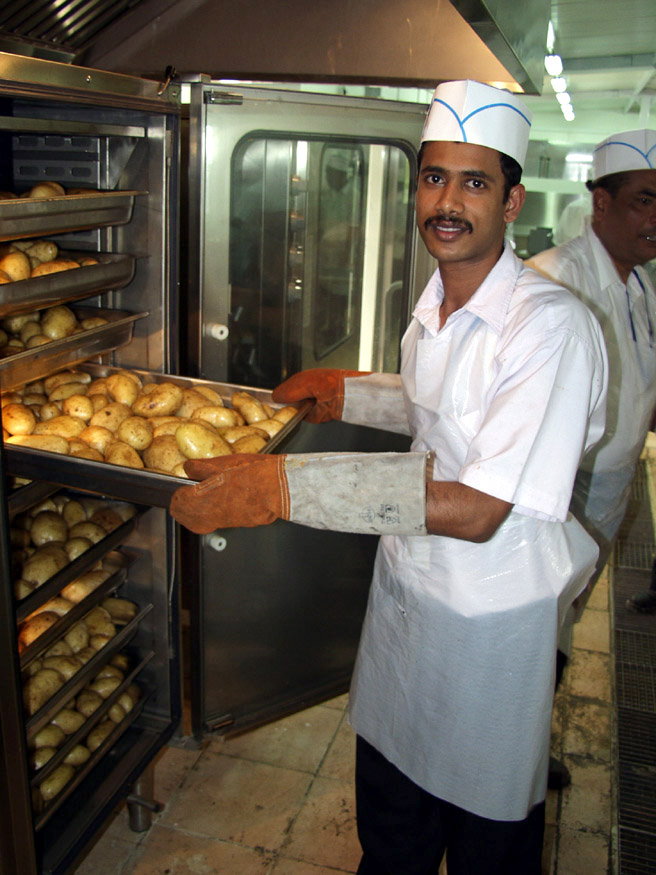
Ready to eat

KIRKUK AIR BASE, Iraq -- Pagitra Mondal, a head cook, takes potatoes out of an oven during lunch at the new dining facility here. The new facility can handle 1,500 people at a time and is able to serve up to 18,000 meals a day.